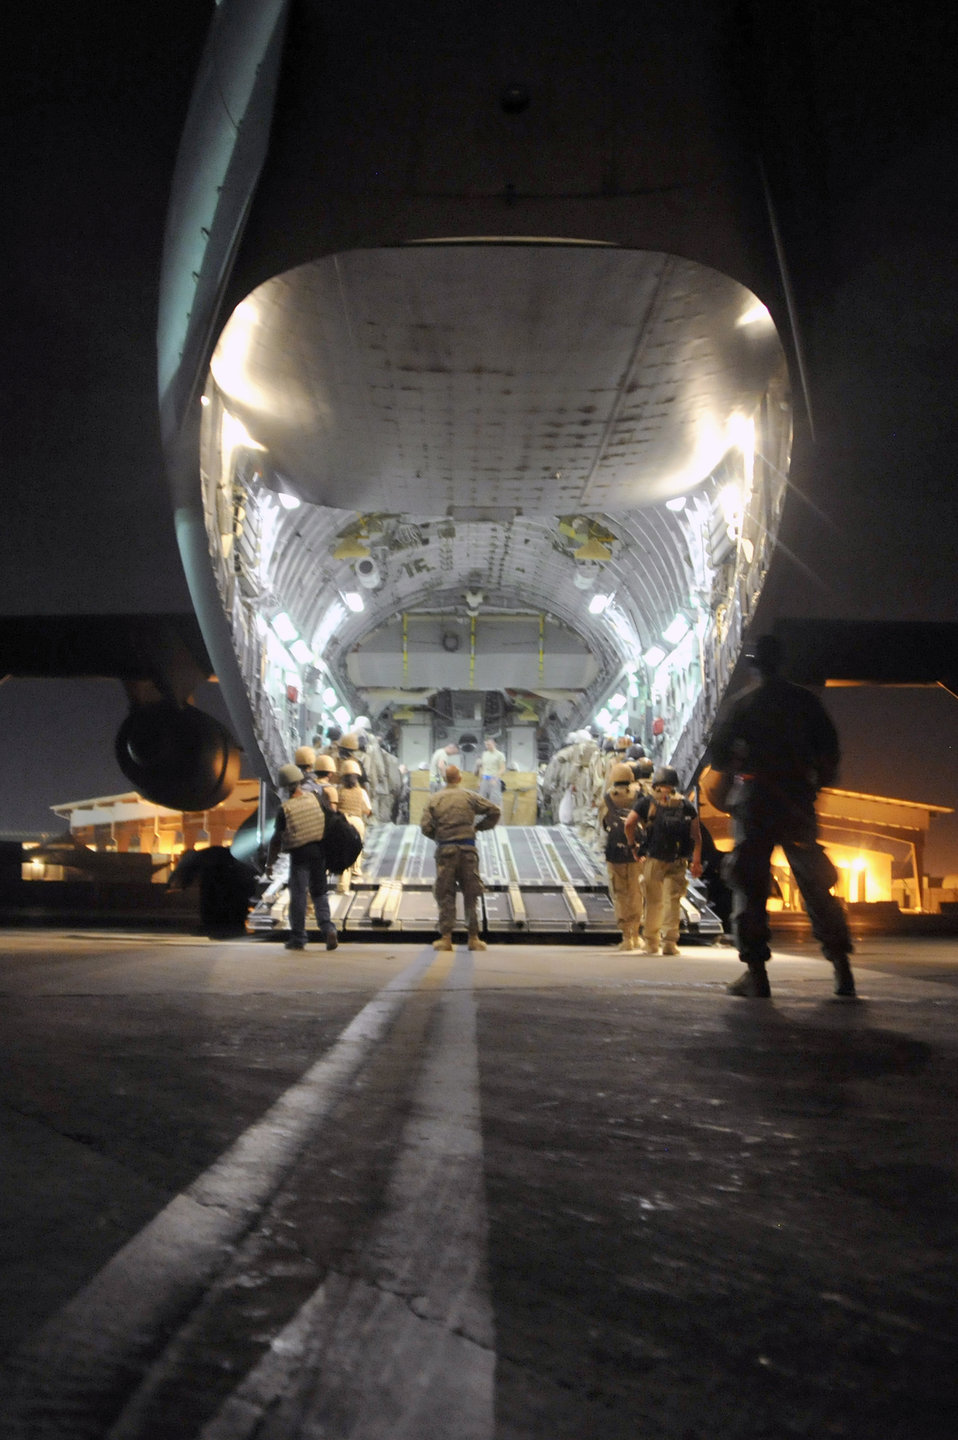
Teamwork keeps Sather Air Base's passenger terminal moving

Aerial porters from 447th Expeditionary Logistics Readiness Squadron oversee the loading of contractors heading to bases throughout Iraq Aug. 6, 2010, at Sather Air Base, Iraq, Aug. 6, 2010.